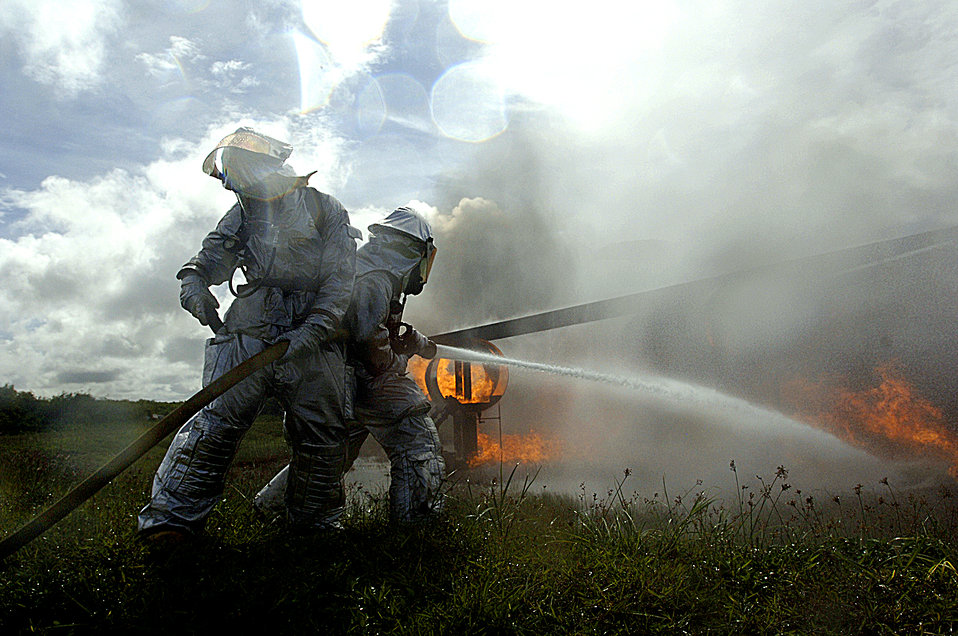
'Beverly' visits Guam

ANDERSEN AIR FORCE BASE, Guam -- Firefighters with the 36th Civil Engineer Squadron work to put out a fire as part of a simulated aircraft crash during Exercise Beverly Palm 05-07. The routine exercise is held several times a year to sharpen the mobility and wartime capabilities of participating servicemembers.